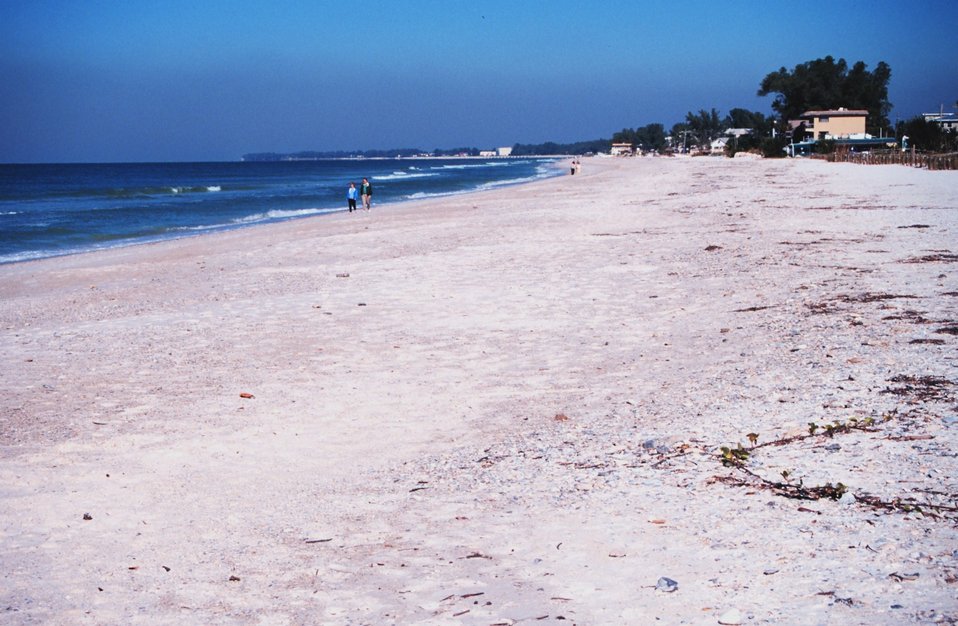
A view of the beach along the Gulf of Mexico